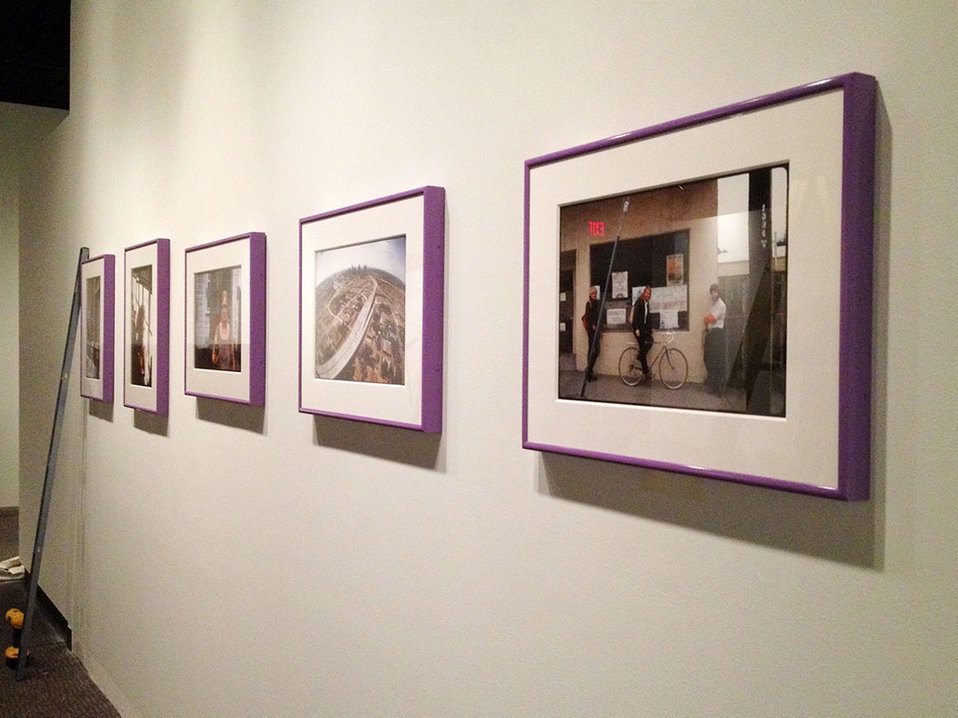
Hanging Documerica Photos

Just installed...framed exhibit photos for the 'Searching for the Seventies' exhibition open March 8 in the O'Brien Gallery.